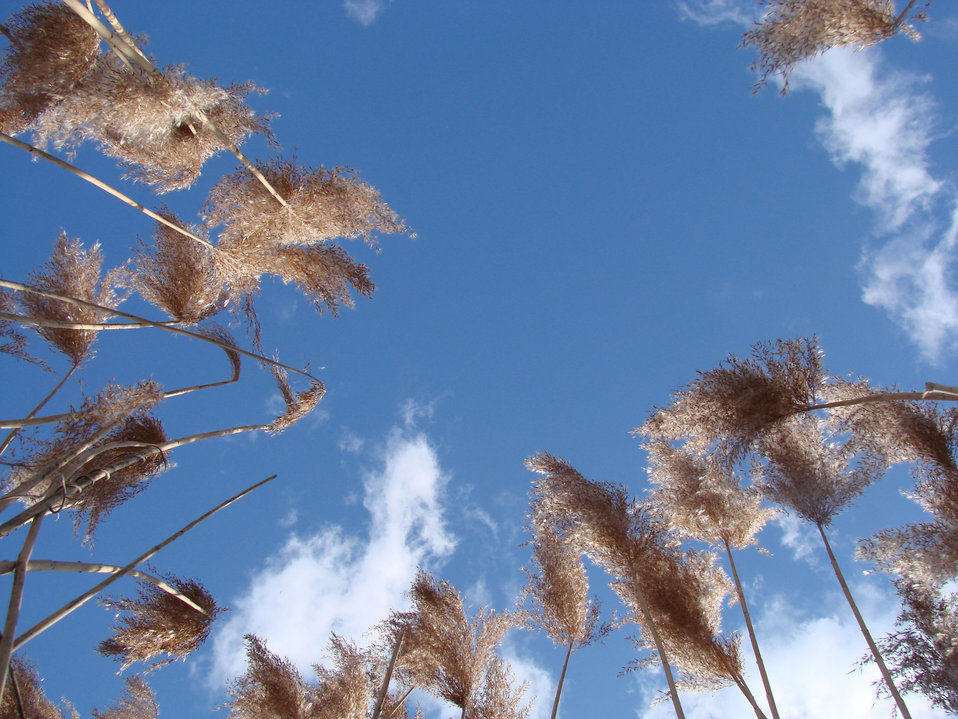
Looking up two

The tall grass reaching up to the spring sky..